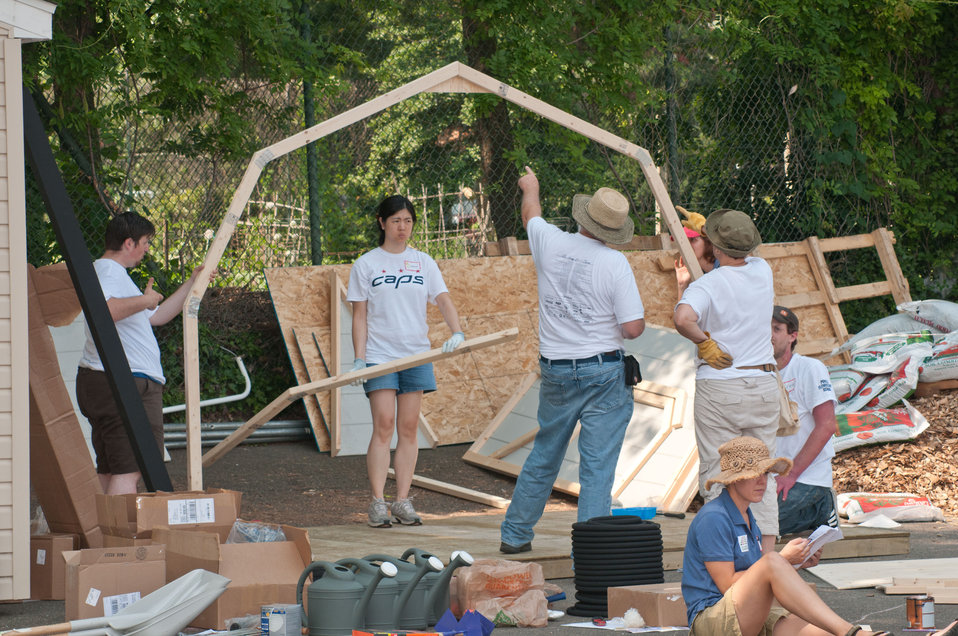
U.S. Department of Agriculture People’s Garden volunteer Patrick Connelly provides some direction during the tool shed build for the People’s Garden, at William B. Powell Elementary School on Thursday, June 9, 2011 in Washington, DC. Volunteers from U.S. Department of Agriculture People’s Garden Executive Master Gardener program and Washington Capitals hockey organization, along with defenseman Jeff Schultz, and mascot Slapshot transformed a grassy corner of the school playground into a habitat garden and outdoor learning area. Executive Master Gardeners led the volunteer project teams. The Washington Capitals donated new tools; tool shed; garden materials; lunch; most of the volunteers and more. The completed projects included a walking path; tiling of garden plots; planting a bird habitat garden, pollinator garden and native grasses; caterpillar and butterfly plaques; hummingbird and bat house, and tool shed. The garden will later include a picnic area, outdoor classroom, hummingbird garden, Monarch watch garden, native bee garden, and birdbath. USDA challenges its employees to establish People's Gardens at USDA facilities worldwide or on this case, help communities create gardens. People's Gardens vary in size and type, but all have a common purpose - to help the community and the environment.